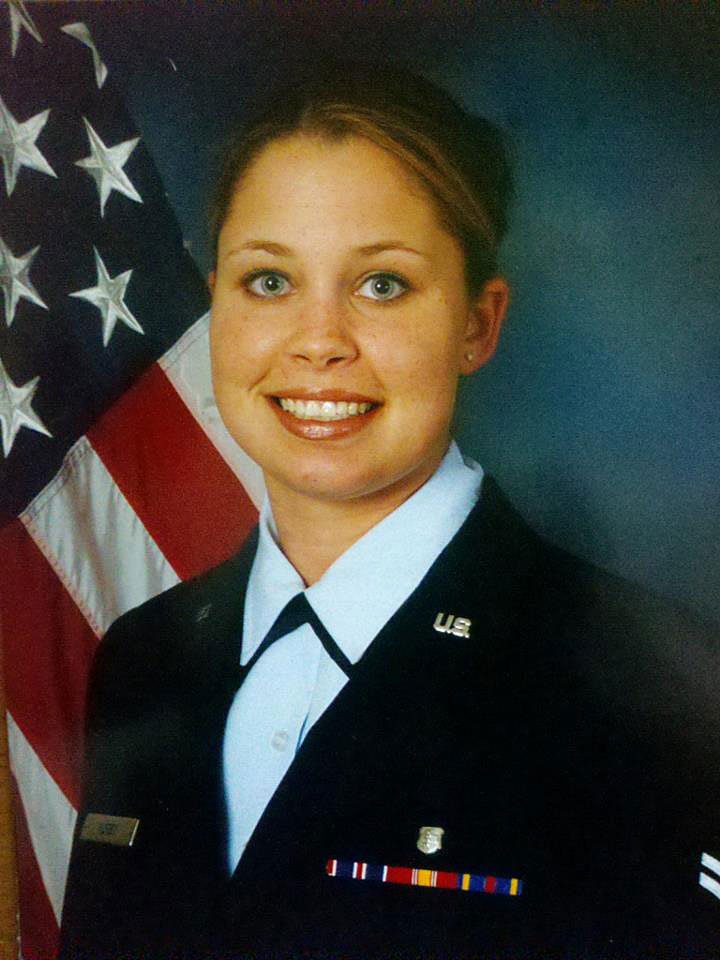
Jessica Robinson -- Northeast Region

Jessica Robinson served in the U.S. Air Force from 2002 to 2008 in Health Service Management, 4A0. She now works at the Chesapeake Marshlands National Wildlife Refuge Complex, Blackwater NWR as an Administrative Support Assistant.